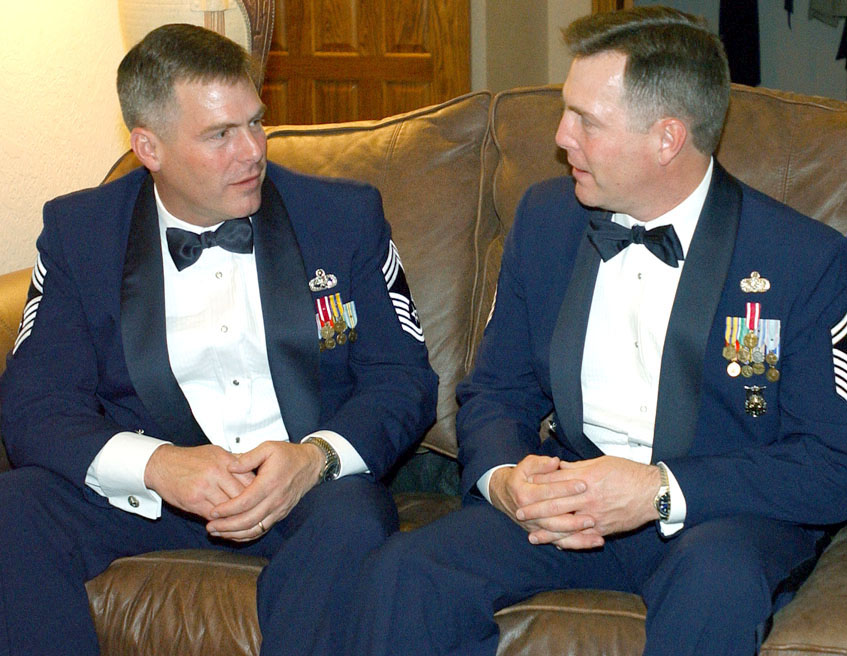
Brothers in arms

CANNON AIR FORCE BASE, N.M. -- Chief Master Sgt. Evan Godwin (left) and his twin brother, Ivan, share a moment before Ivan's chief master sergeant induction ceremony here. Evan is a weapons chief with the 18th Wing at Kadena Air Base, Japan, and Ivan is the fire chief with the 27th Civil Engineer Squadron here.